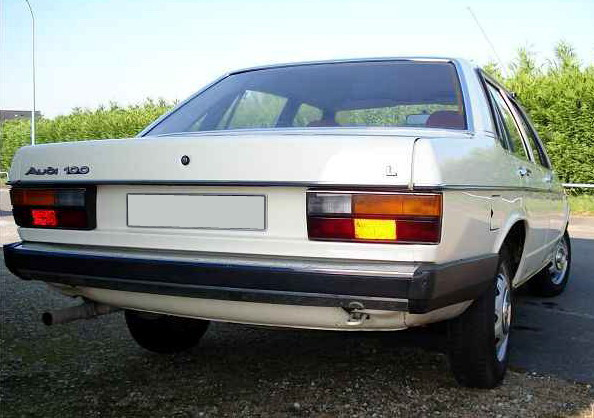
Deutsch: Audi100 c2 Hi